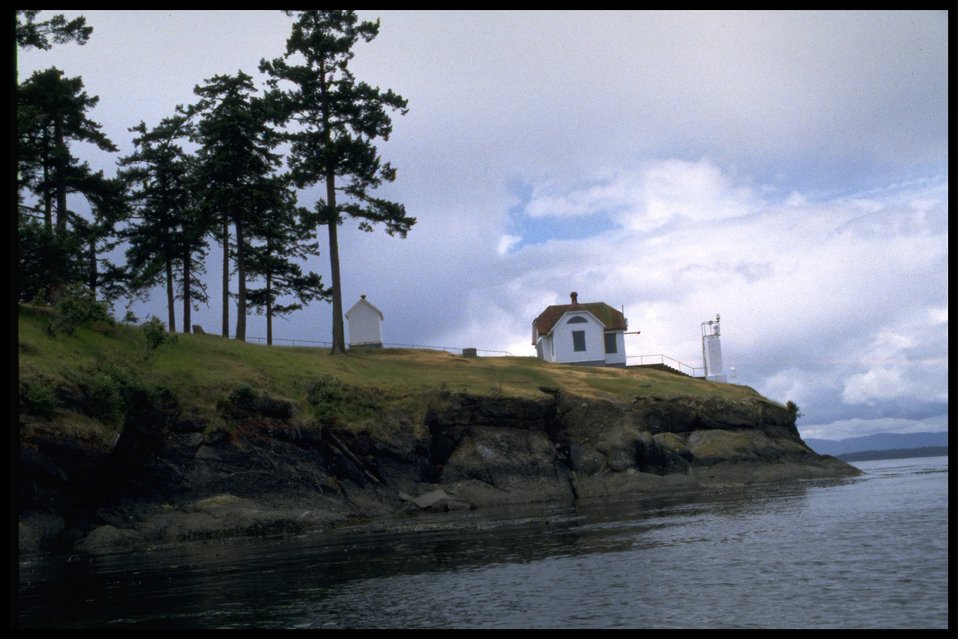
Turn Point from water with light station and buildings. Series of 17 photos.